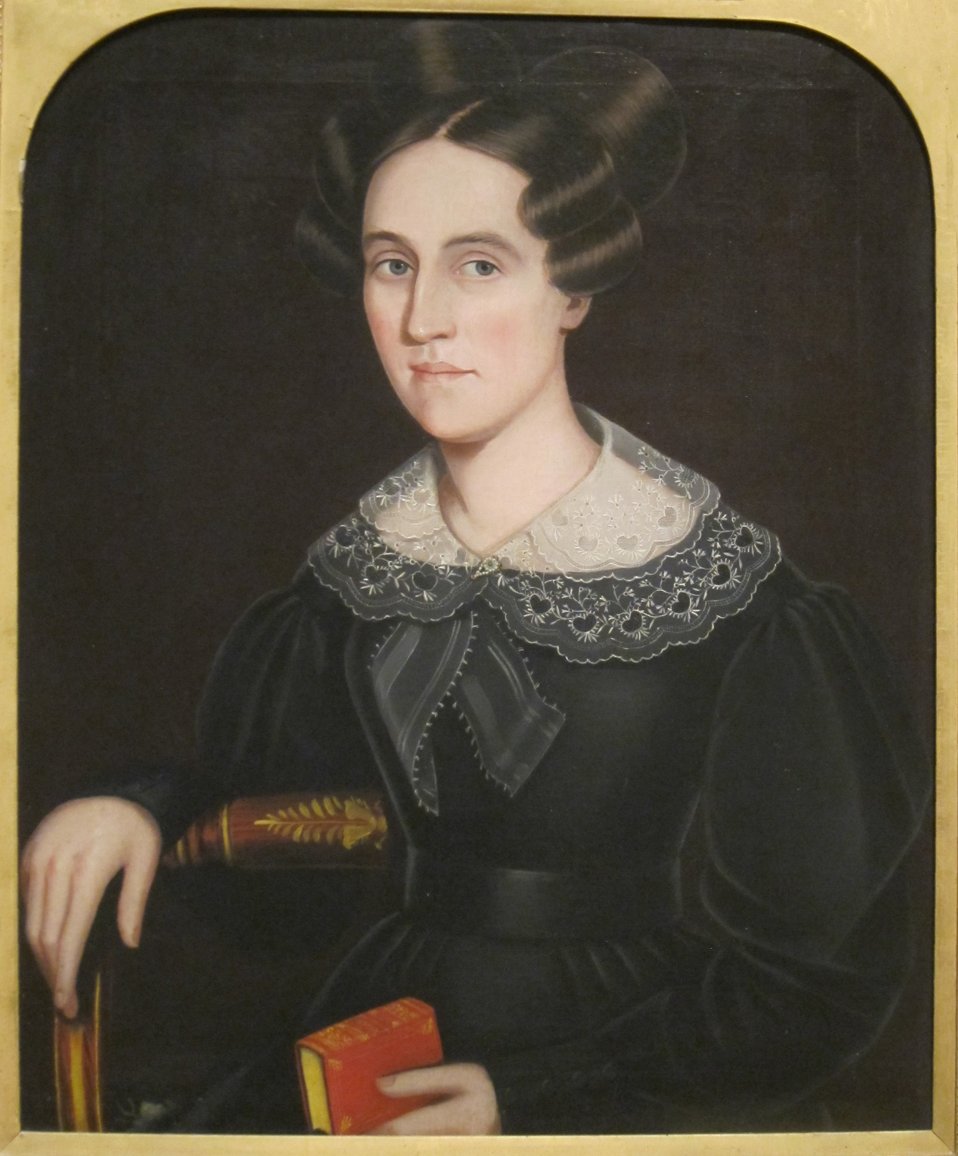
Jane Ann Benjamin Powers (Mrs. Charles Westley Powers), oil on canvas painting by Ammi Phillips, 1829, long-term loan to the Dayton Art Institute